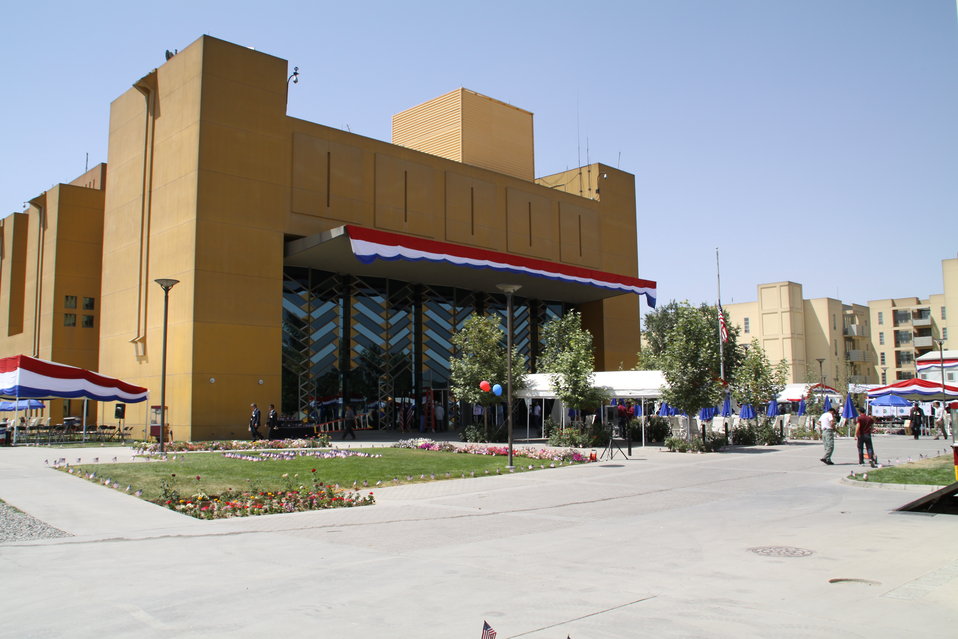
Kabul Official July 4th Celebration